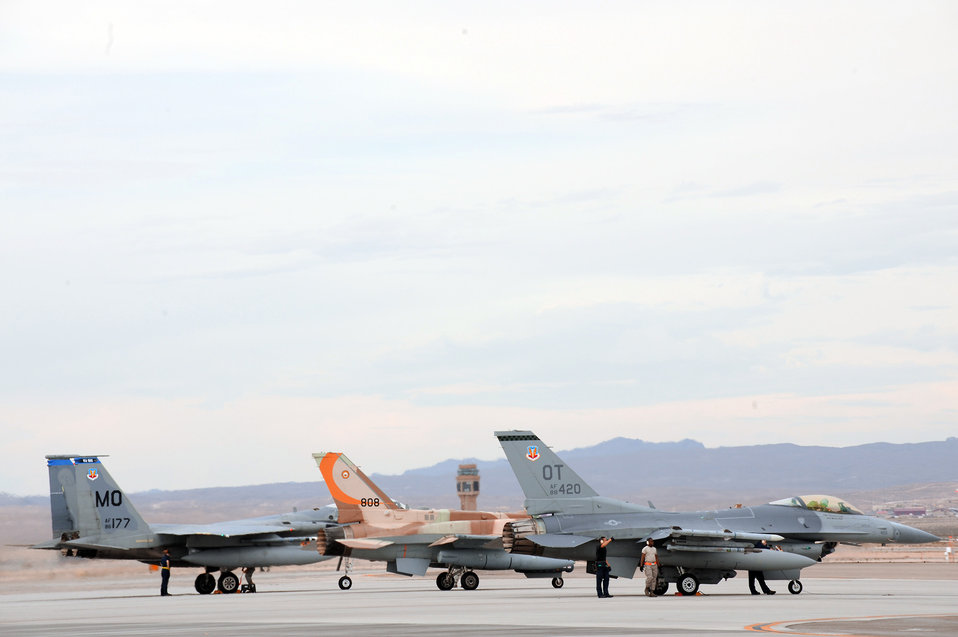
Realistic training with Red Flag

An F-15C Eagle, an Israeli F-16CG and an F-16 Fighting Falcon wait at the end of the runway at Nellis Air Force Base, Nev., before departing on a training mission during Red Flag 09-4. The F-15 is from Mountain Home AFB, Idaho; the Israeli aircraft is from Ramon Air Base and the F-16 is with the Ohio Air National Guard.